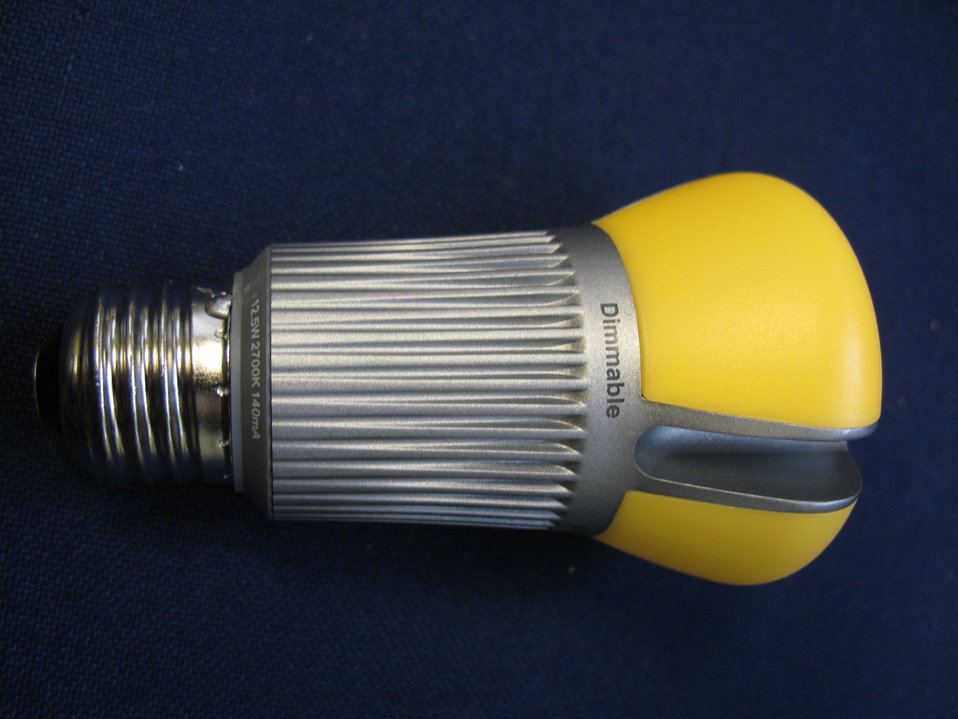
New research from Pacific Northwest National Laboratory indicates light-emitting diode light bulbs, an example of which is shown here, are more environmentally friendly than compact fluorescent and incandescent lights.